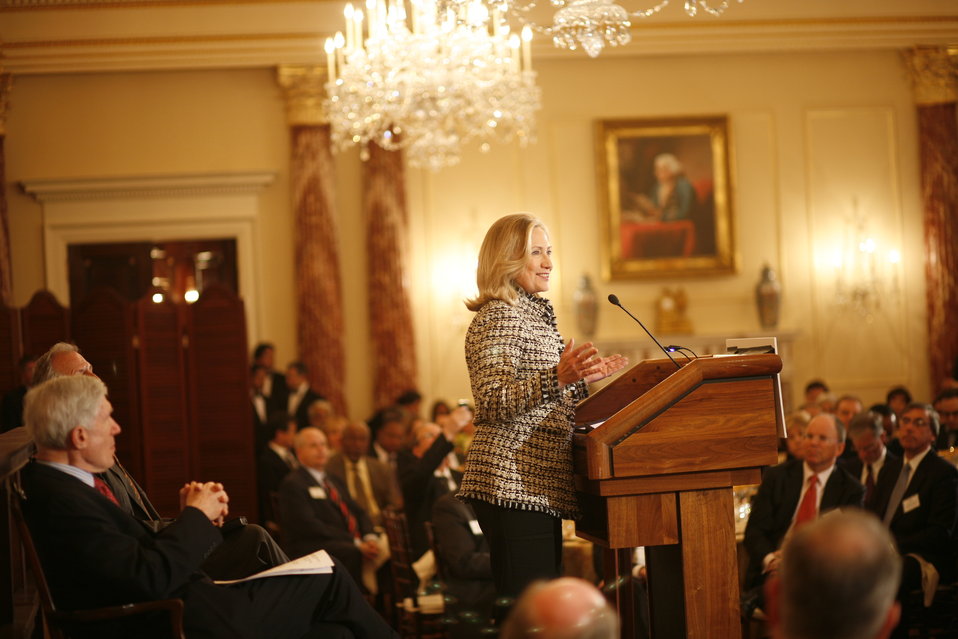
Secretary Clinton Delivers Remarks

U.S. Secretary of State Hillary Rodham Clinton delivers remarks at the first-ever State Department Global Business Conference at the U.S. Department of State in Washington, D.C., on February 21, 2012.